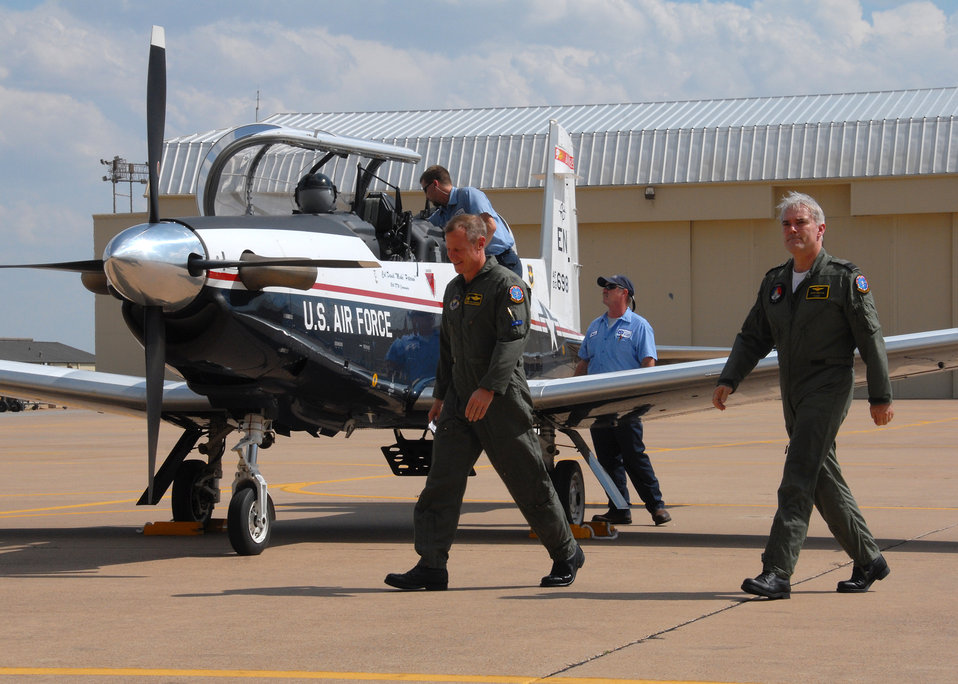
Sheppard replaces T-37s

Col. David Petersen (left) the 80th Flying Training Wing commader and Royal Netherlands air force Air Commodore Peter Berlijn make their way to the official T-6 Texan II arrival ceremony March 31 at Sheppard Air Force Base, Texas, after landing in the wing's newest training aircraft. Sixty-nine T-6s will replace 74 T-37 Tweets over the next 18 months.